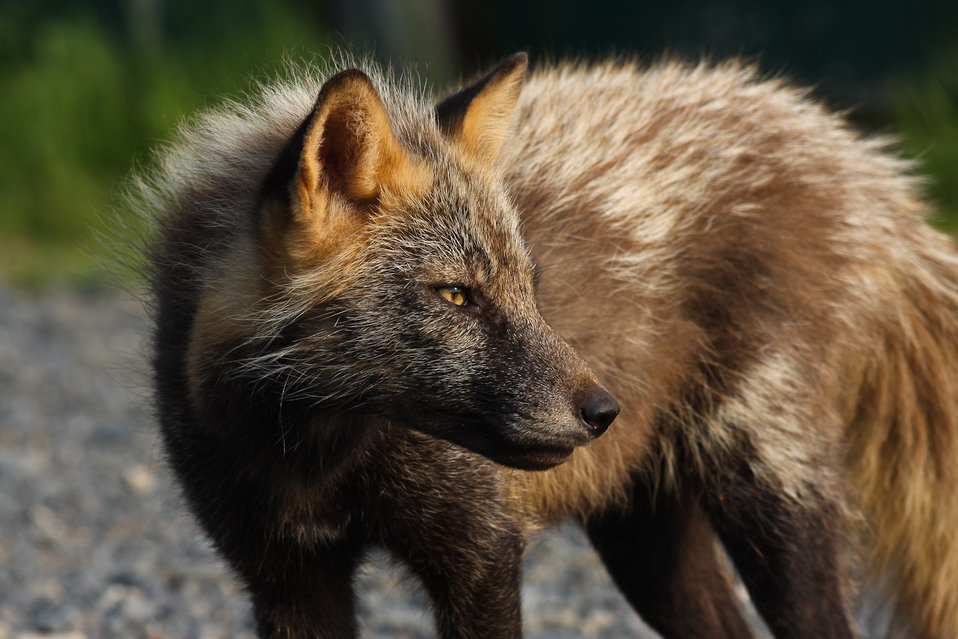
Summer fox

Lisa Hupp/USFWS